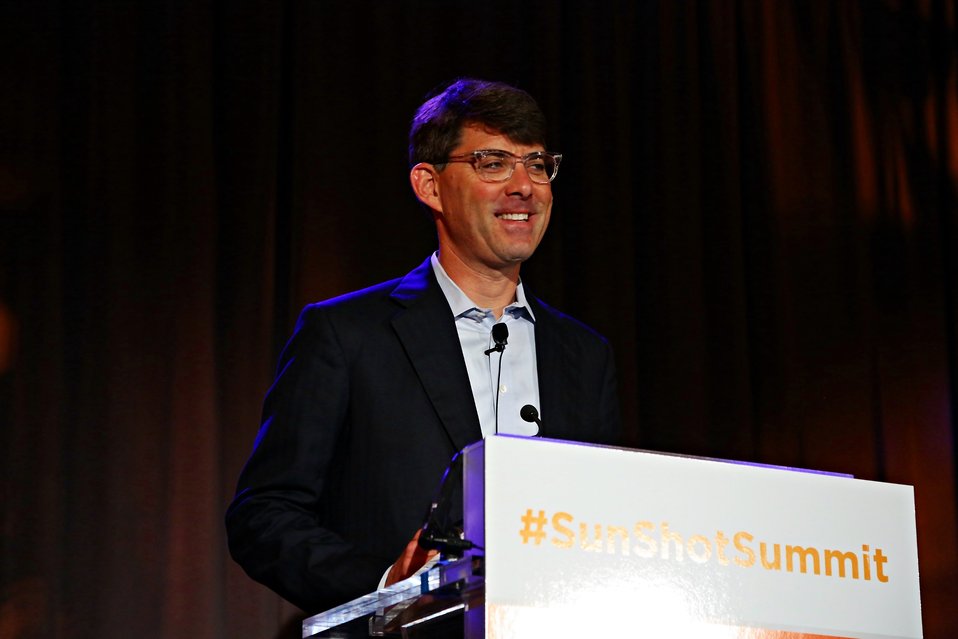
Day 2 Keynote Session 10

Jeffery Ball, Scholar-in-Residence at Stanford University, moderating the day 2 headlining panel.